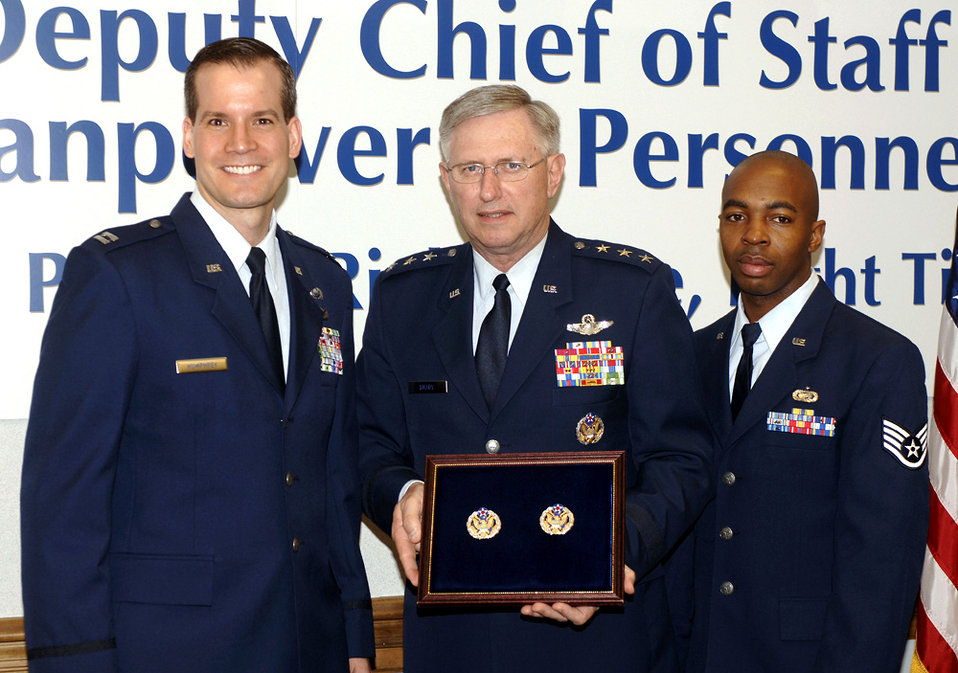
Air Staff badge debuts at Pentagon ceremony

Lt. Gen. Roger Brady, deputy chief of staff for manpower and personnel, prepares to present a new Headquarters Air Force badge to Capt. Brian Humphrey and to Staff Sgt. Chris Kennerly during a ceremony marking the official release of the badge on Friday, May 19, 2006, in the Pentagon. Airmen assigned to the Pentagon will have the option to wear the new badge. The basis for the badge is Air Force heritage and the design incorporates many elements from the Department of the Air Force Seal. Air Force Chief of Staff Gen. T. Michael Moseley approved the design and development of the badge in September.